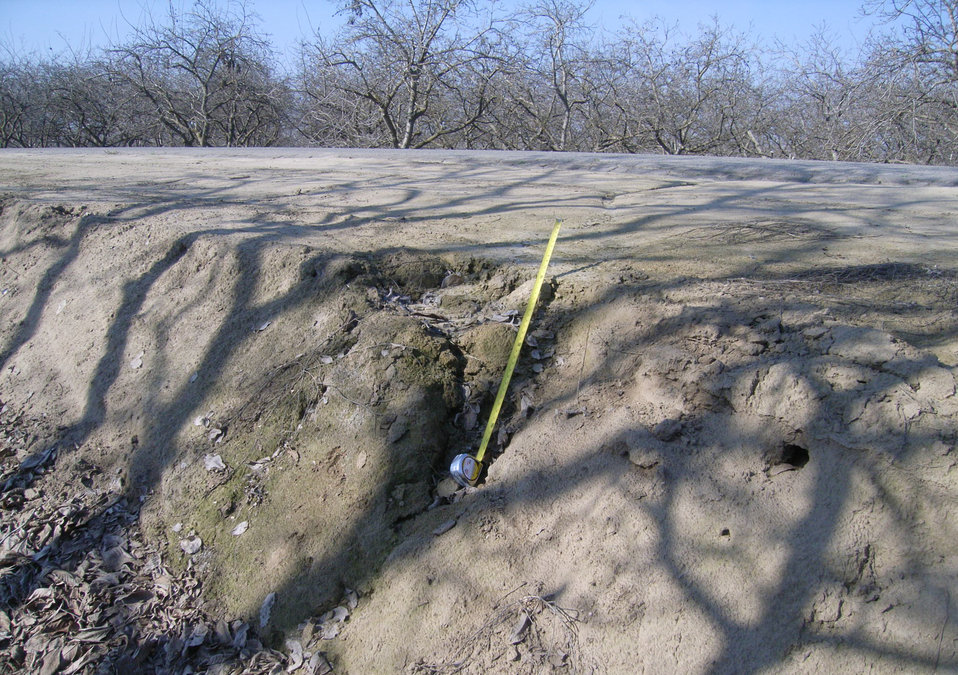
Erosion on Kings River levee

Levee erosion in the Fresno County, Calif., area, shown during a levee inspection in 2012. The U.S. Army Corps of Engineers inspects levees in its Rehabilitation and Inspection Program to ensure levees don’t pose an unacceptable risk to lives and to provide levee managers and residents with detailed information on the condition of levees to help them make informed decisions about safety.